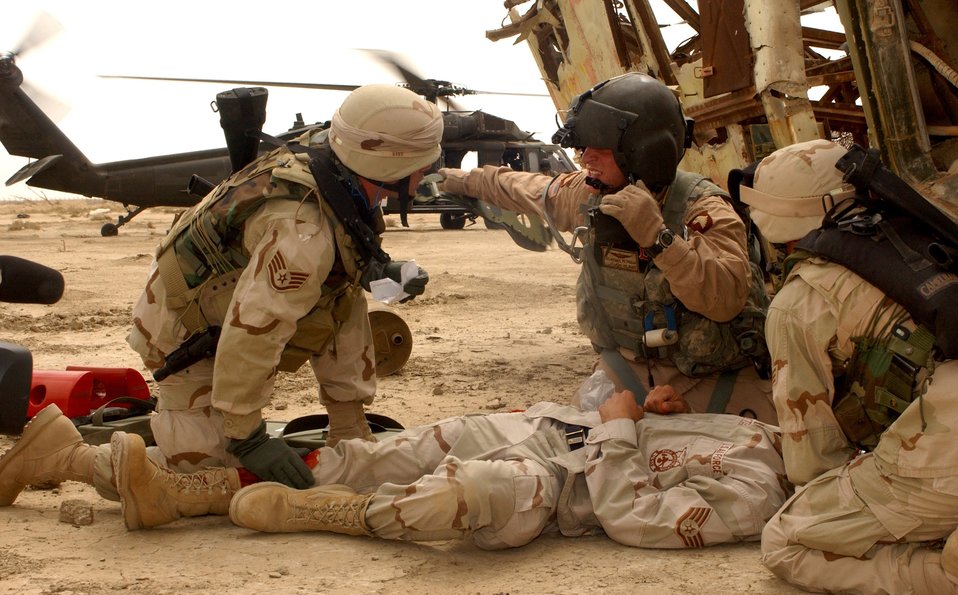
Simulated vehicle accident

Staff Sgt. Matthew Loughlin, Army Staff Sgt. Michael Petrelli and Senior Airman Andy Gerdeman respond to a simulated vehicle accident Monday, April 3, 2006, at Ali Base, Iraq. The simulated accident was a joint exercise with Company C 3rd 126 Air Ambulance and the 407th Expeditionary Civil Engineer Squadron. .